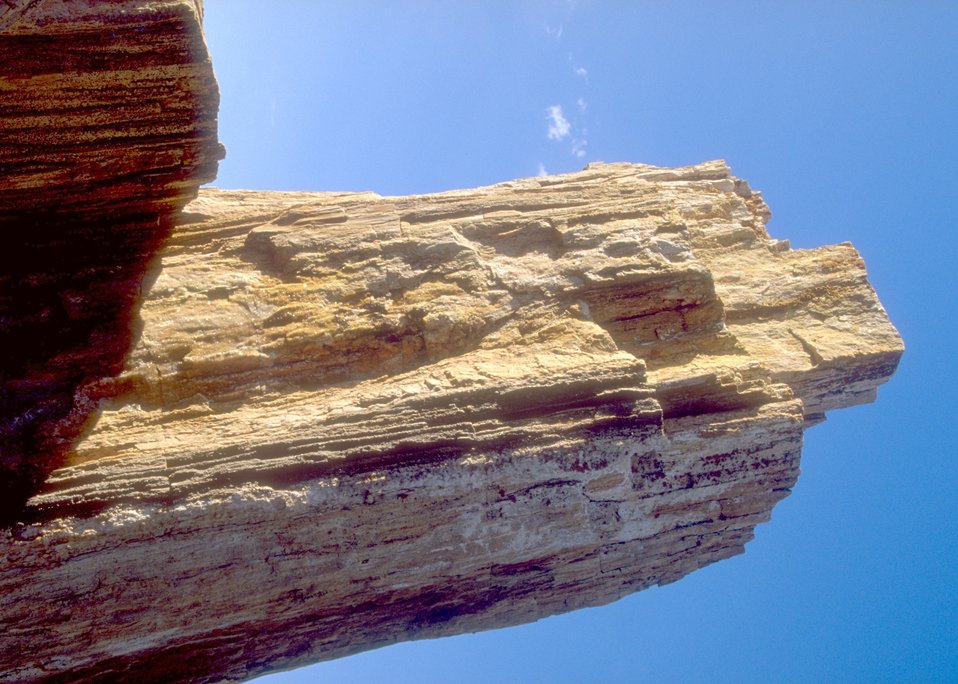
Dry Creek Petrified Tree Area, Buffalo Field Office.